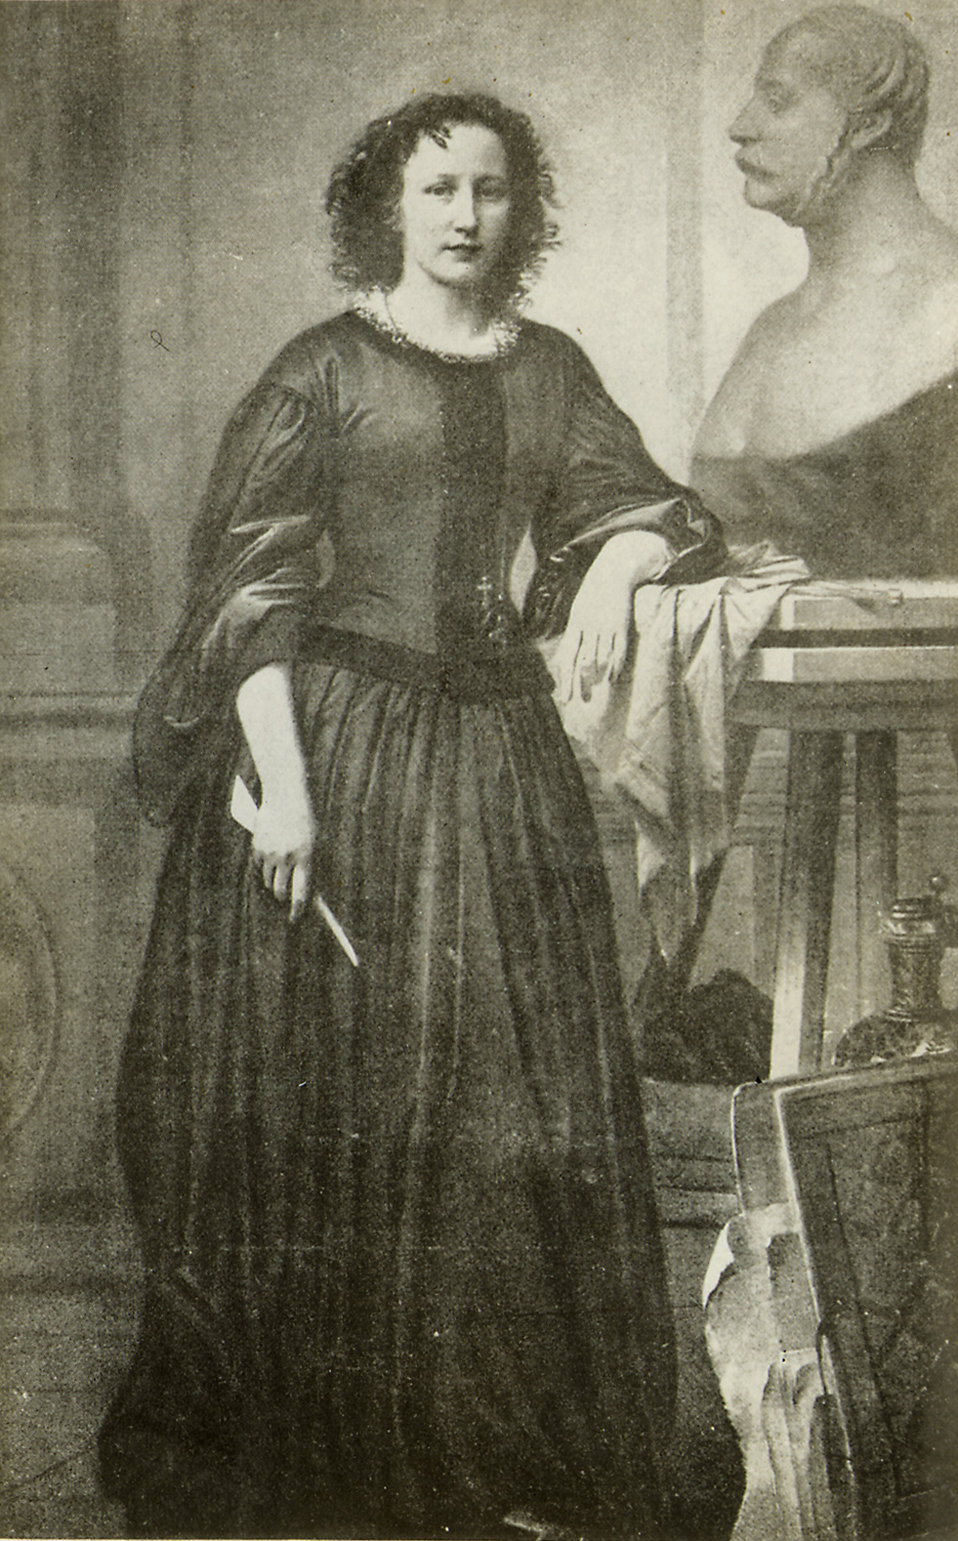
Elisabet Ney (1833-1907) - Women Artists

Sculptor, marble statues of Stephen F. Austin and Sam Houston of Texas for the National Statuary Hall Collection.